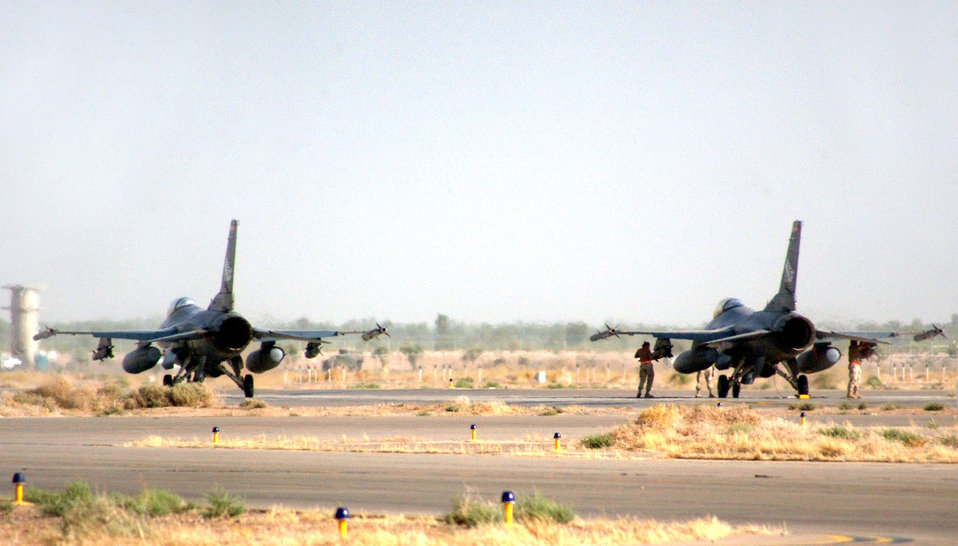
Balad F-16s destroy terrorist training camp

Two F-16 Fighting Falcons go through arming before heading out on a combat mission in support of Operation Iraqi Freedom July 22 at the end of runway at Balad Air Base, Iraq. The two F-16s are deployed from the Oklahoma Air National Guard's 138th Fighter Wing at the Tulsa International Airport. F-16s from the 332nd Air Expeditionary Wing destroyed an al-Qaida training camp southwest of Baghdad July 21.